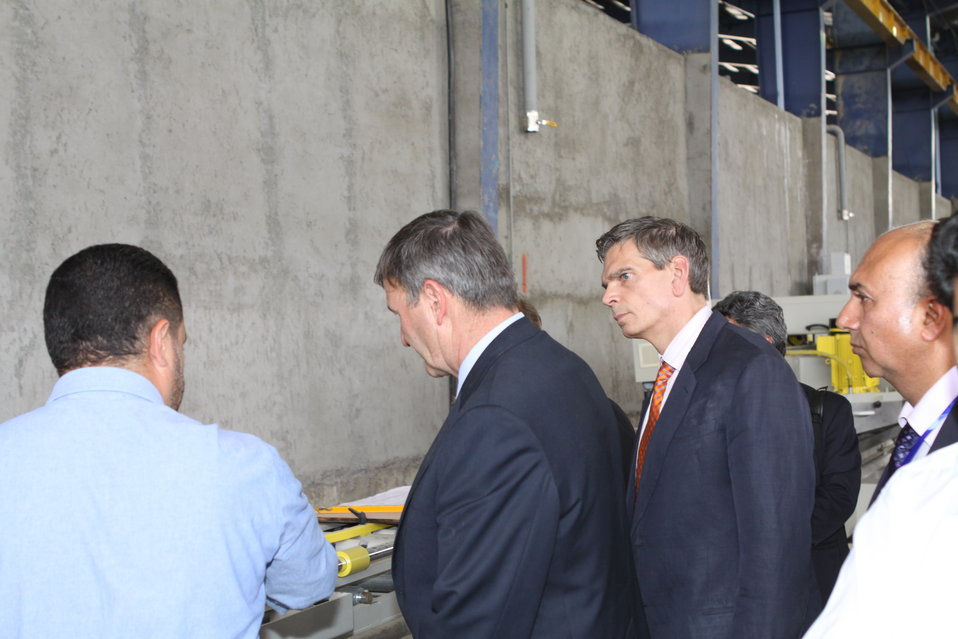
100525 Hirat Marble Conference 397